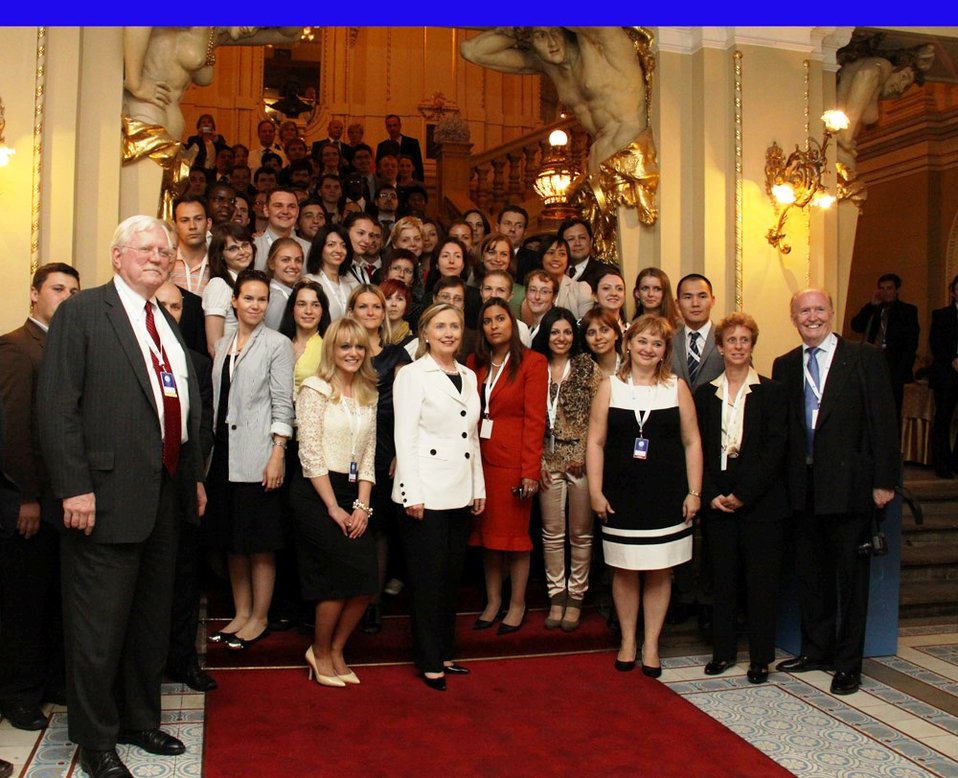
Secretary Clinton Poses for a Group Photo With Community of Democracies Participants

U.S. Secretary of State Hillary Rodham Clinton poses for a group photo with participants of the Community of Democracies conference at the Slowacki Theater in Krakow, Poland, on July 3, 2010.